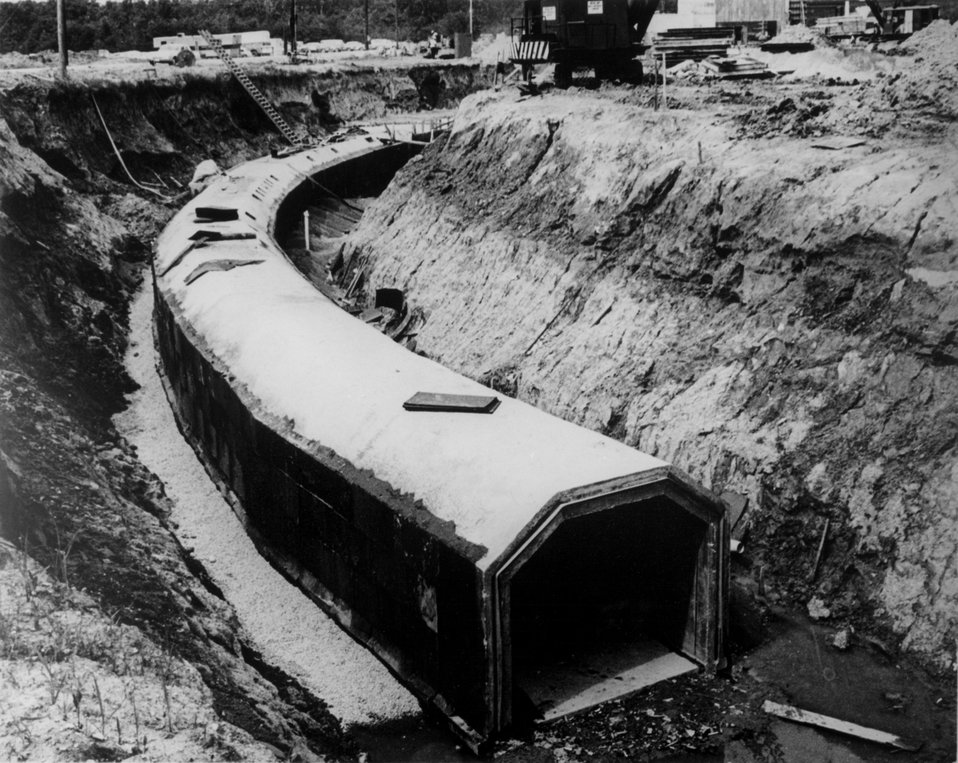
Three major accelerators in series will be used to accelerate protons to an energy of 200 BeV (billion electron volts) at the Atomic Energy Commission's National Accelerator Laboratory under construction near Batavia Illinois. c. 1969